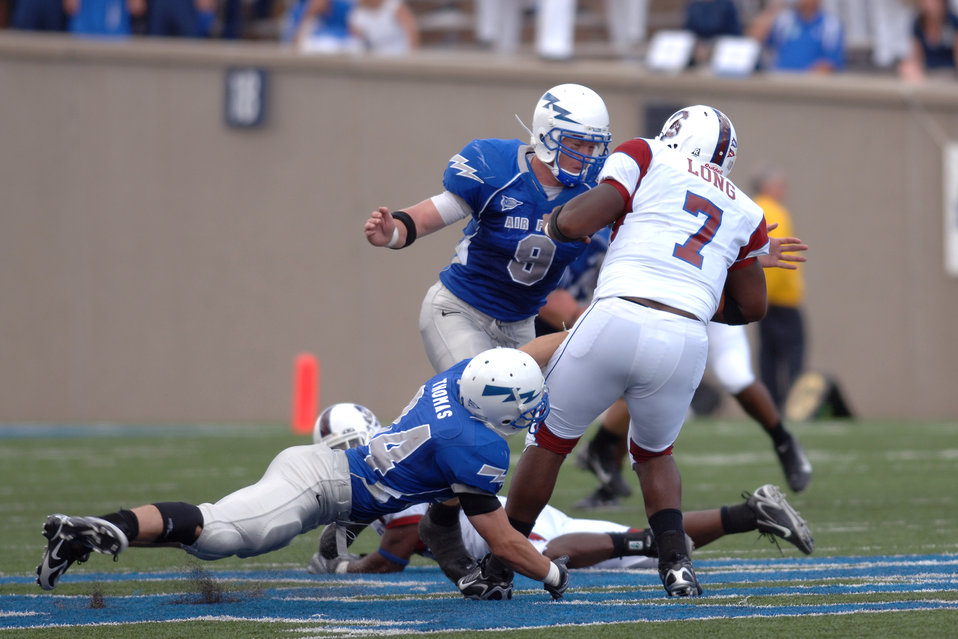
Calhoun era kicks off with 34-3 win

Air Force defenders Chris Thomas and John Rabold get to South Carolina State quarterback Malcomb Long. The Falcons won 34-3 Sept. 1 in their opening game at home.